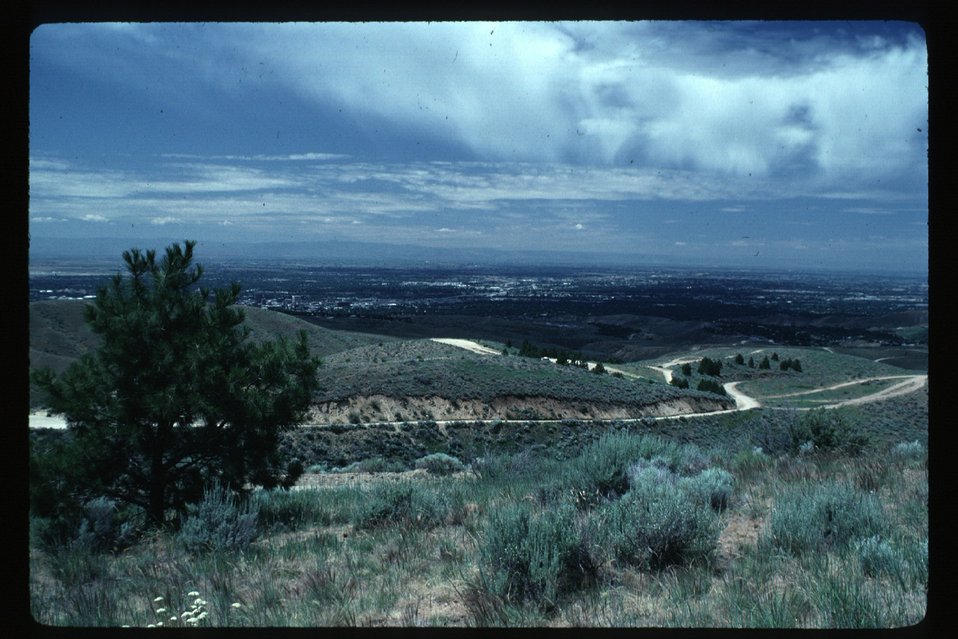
Hulls Gulch Boise Front Four Rivers Field Office LSRD Lower Snake River District